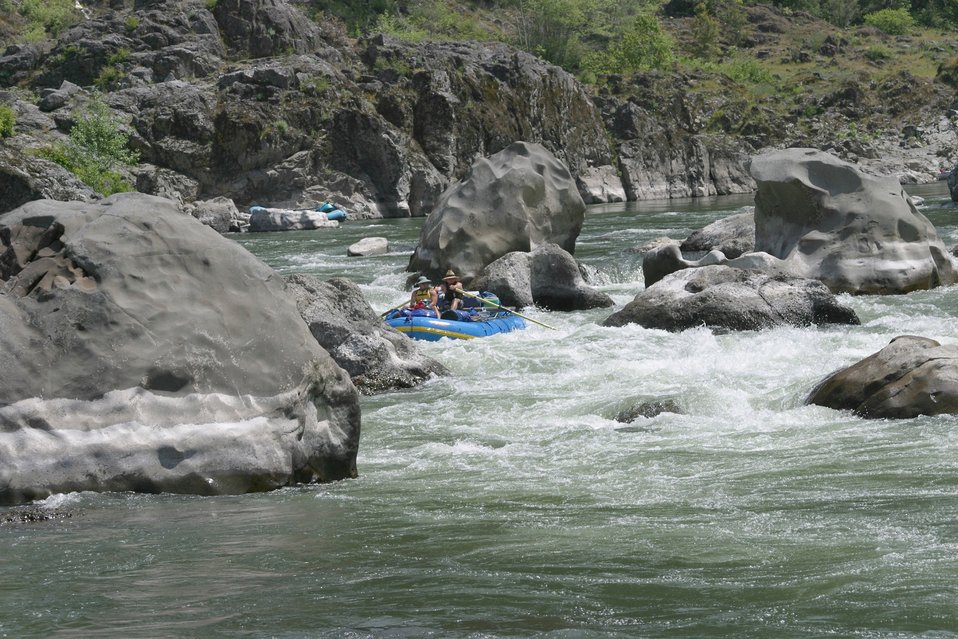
Wild section of the Rogue River from Grave Creek to Foster Bar May 19 to May 22.